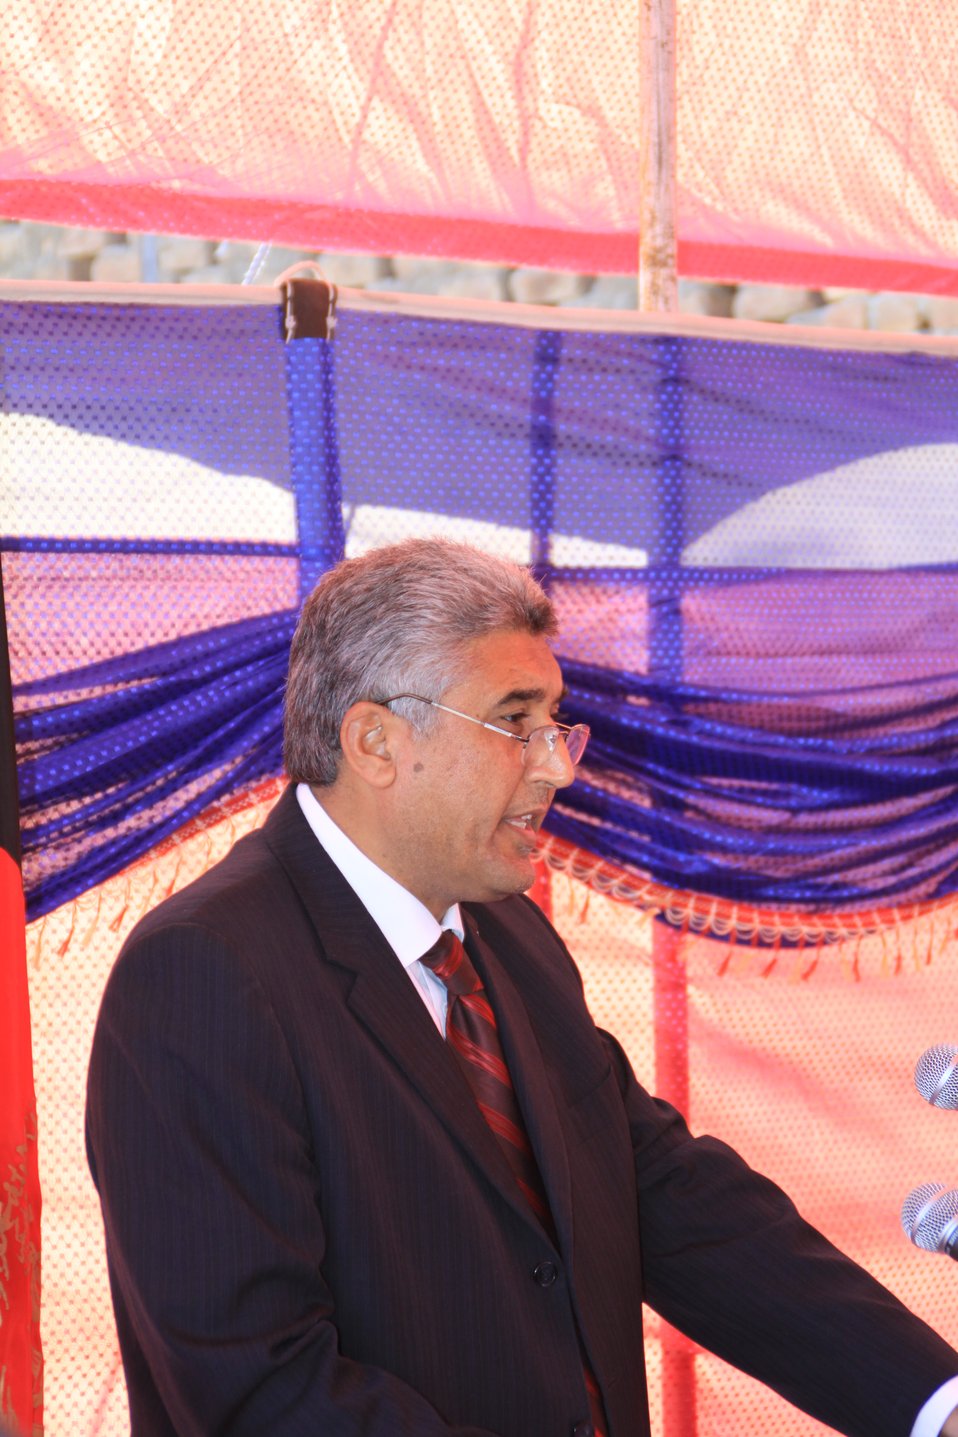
AVIPA Plus Wheat Seed Distribution 101005